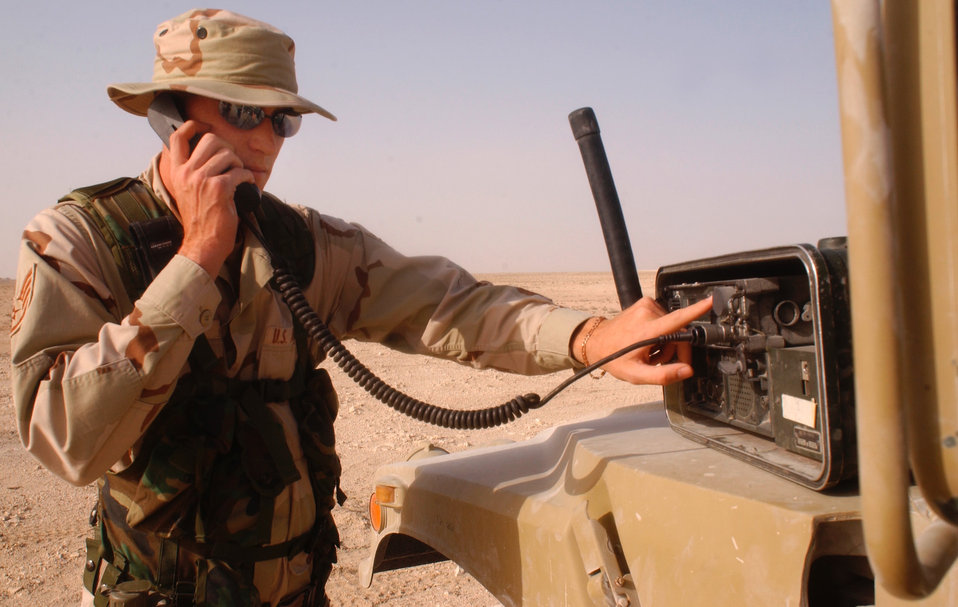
Parks

OPERATION IRAQI FREEDOM -- Staff Sgt. Matt Parks radios in from the field March 23 to test a new radio tower at a forward-deployed Operation Iraqi Freedom location. He is a member of the 379th Expeditionary Communications Squadron.